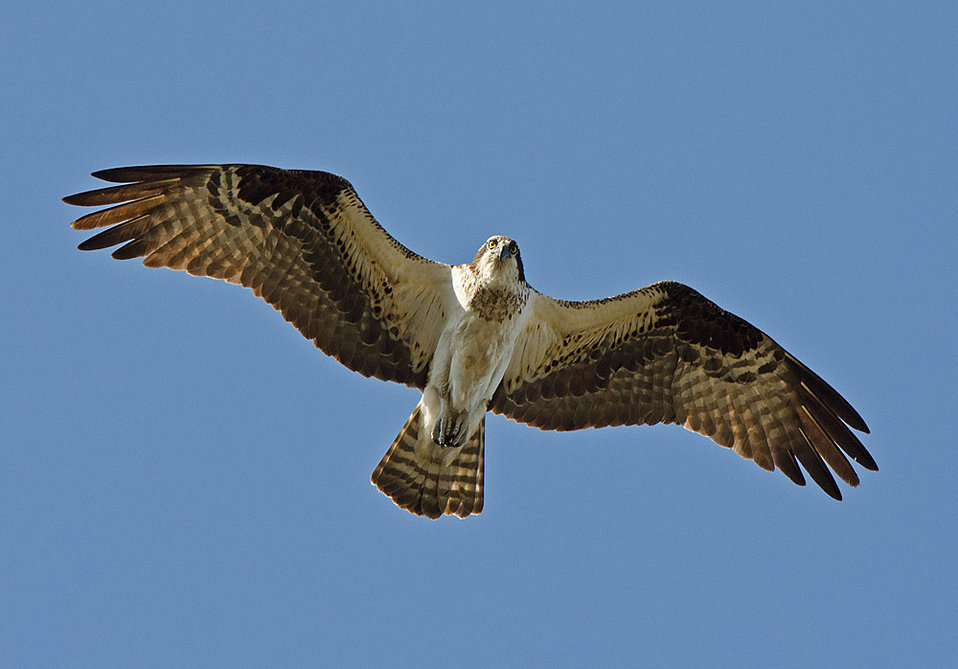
Osprey in flight

Great Bay National Wildlife Refuge, MA.